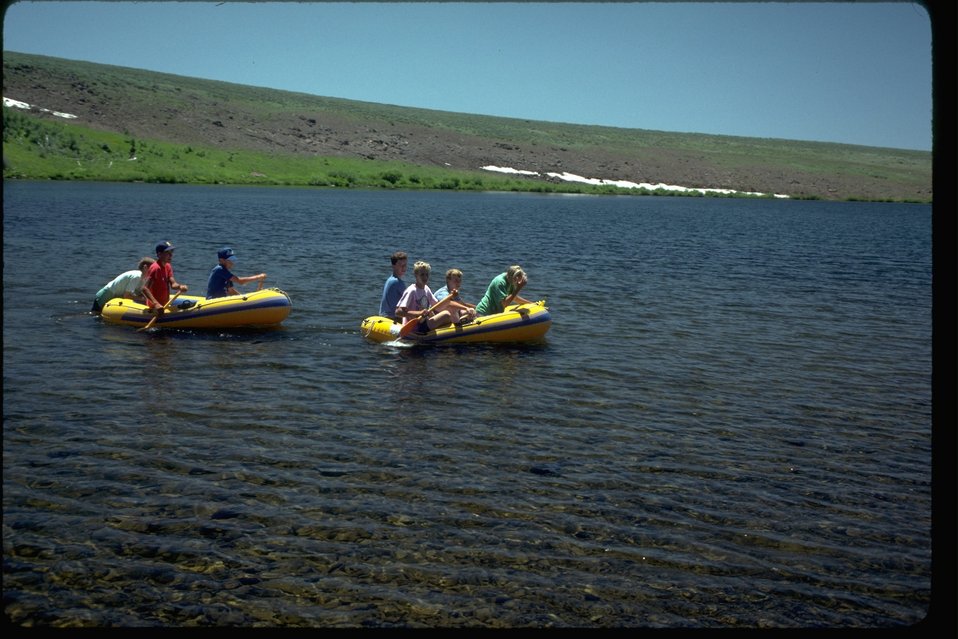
Water fun on rafts at Fish Lake along Steens Mountain in Southeastern Oregon.